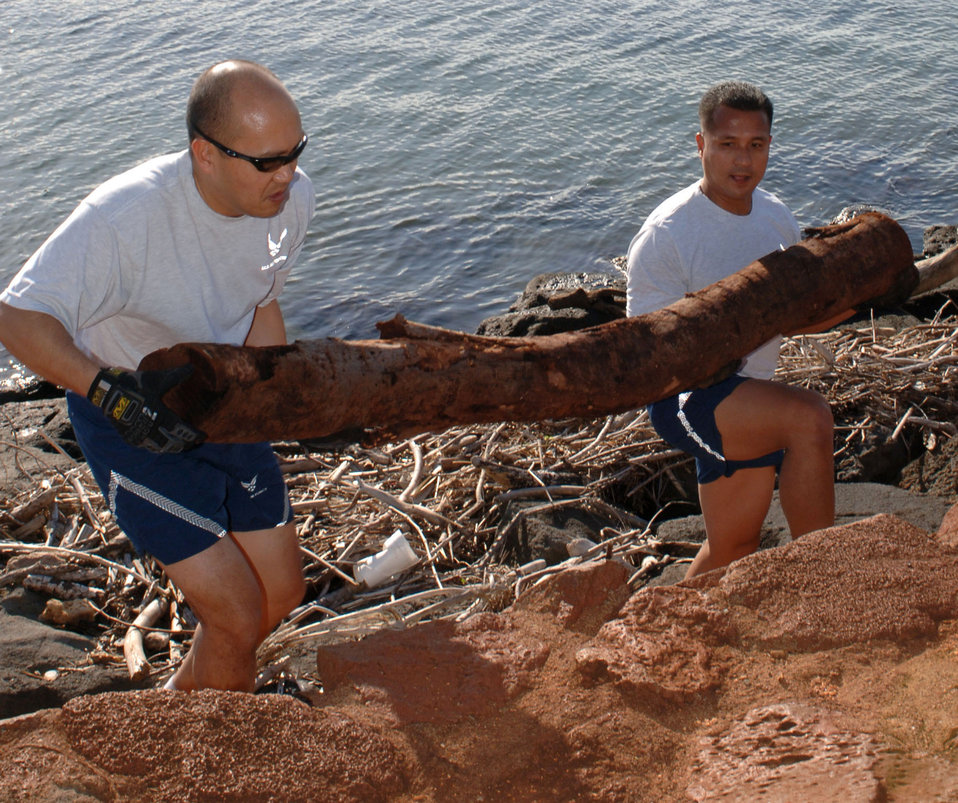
Hickam Airmen serve Oahu community during Jungle Day

Lt. Col. Lamberto Braza (left) and Col. Amando Gavino heave a driftwood log from the rocky shoreline March 13 at Ala Moana Beach Park in Honolulu. The Airmen volunteered for the beach cleanup as part of 13th Air Force's Jungle Day, a tradition for the unit that occurs every Friday the 13th.